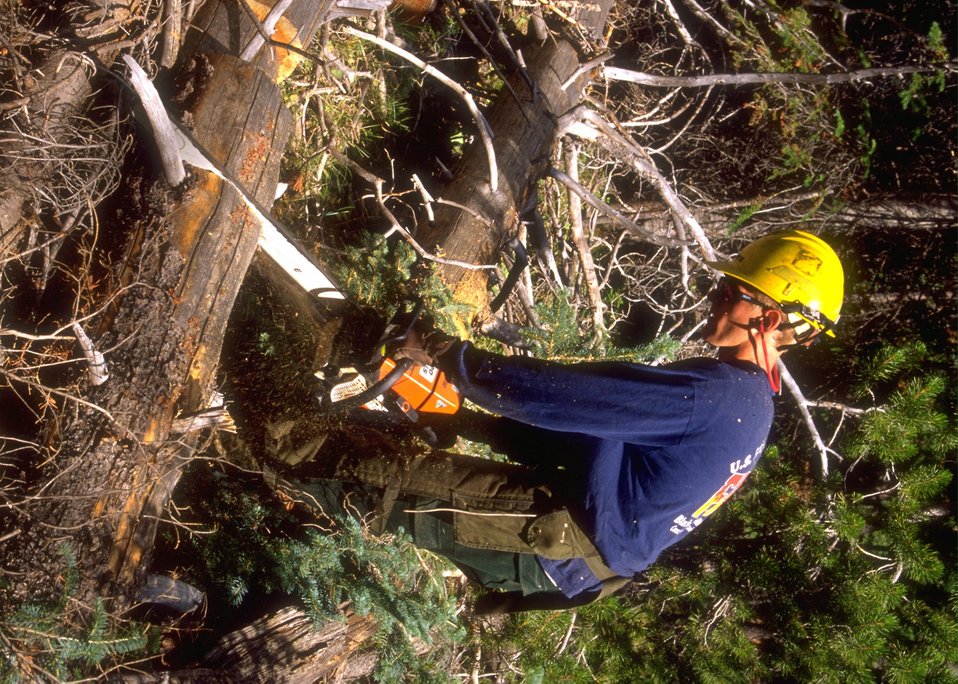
Fuels reduction management in progress at Muddy Mountain Recreation Area, Casper Field Office.